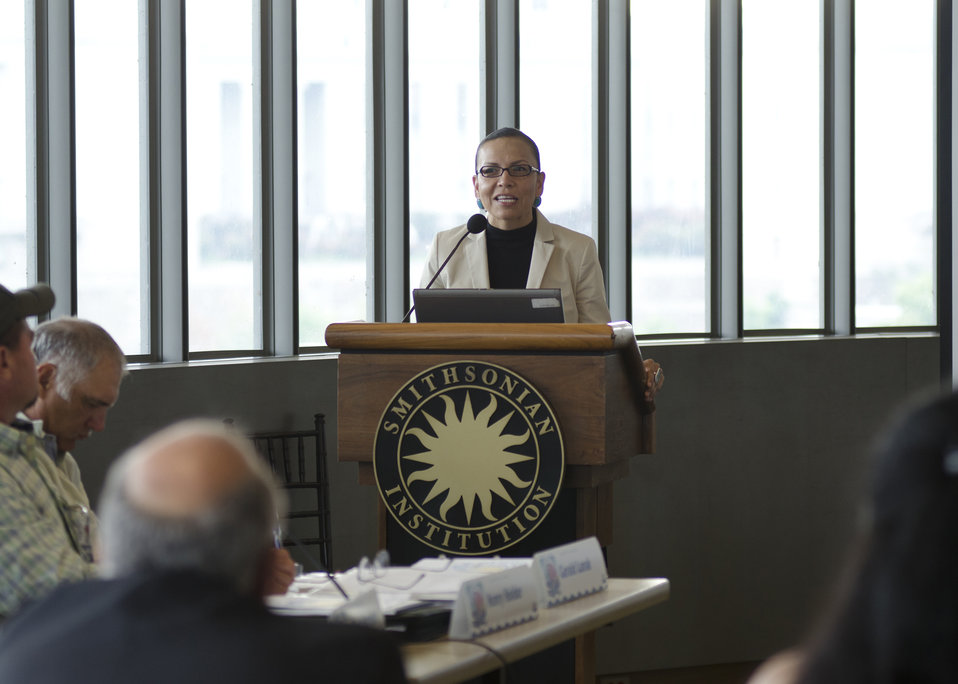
White House Senior Advisor to the President Jodi Gillette speaks at the first business meeting of the U.S. Department of Agriculture’s (USDA) Council for Native American Farming and Ranching (CNAFR) heldat the first business meeting of the U.S. Department of Agriculture’s (USDA) Council for Native American Farming and Ranching (CNAFR) held at the National Museum of the American Indian in Washington, D.C., on Tuesday, Aug. 14, 2012. CNAFR was created to advise the Secretary on ways to eliminate barriers to participation for Native American Farmers and Ranchers in USDA programs. The Council was established as part of the Keepseagle settlement, and is conducted under the oversight of USDA's Office of Tribal Relations under the Office of the Secretary of Agriculture.